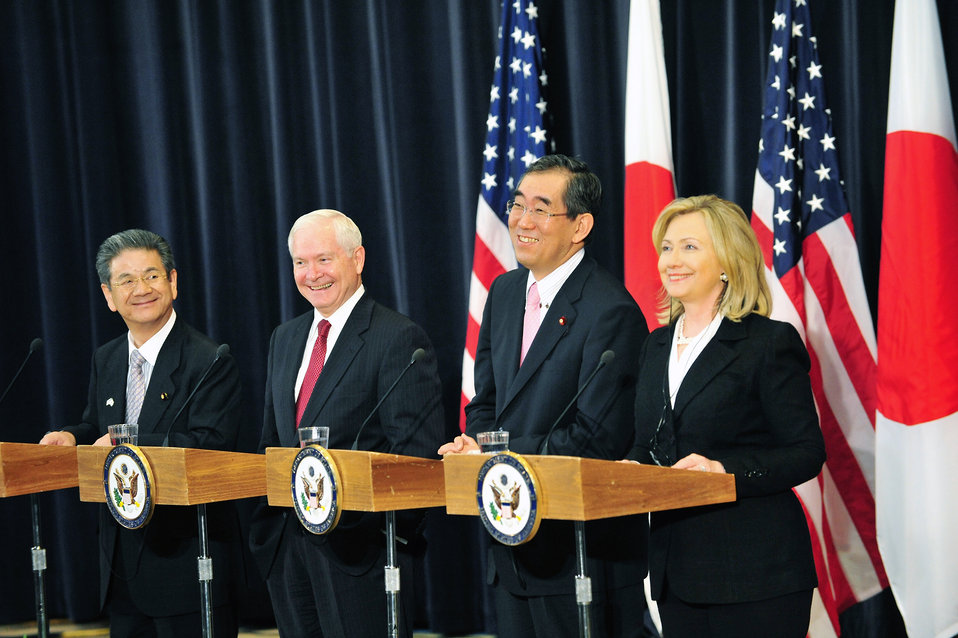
Secretary Clinton, Japanese Foreign Minister Matsumoto, Secretary Gates, and Japanese Defense Minister Kitazawa Hold a Joint Press Conference

U.S. Secretary of State Hillary Rodham Clinton, right; Japanese Foreign Minister Takeaki Matsumoto; center right; U.S. Secretary of Defense Robert Gates, center left; and Japanese Defense Minister Toshimi Kitazawa, left; hold a joint press conference after the U.S.-Japan Security Consultative Committee meeting, known as the 2 2, at the U.S. Department of State in Washington, D.C., on June 21, 2011.